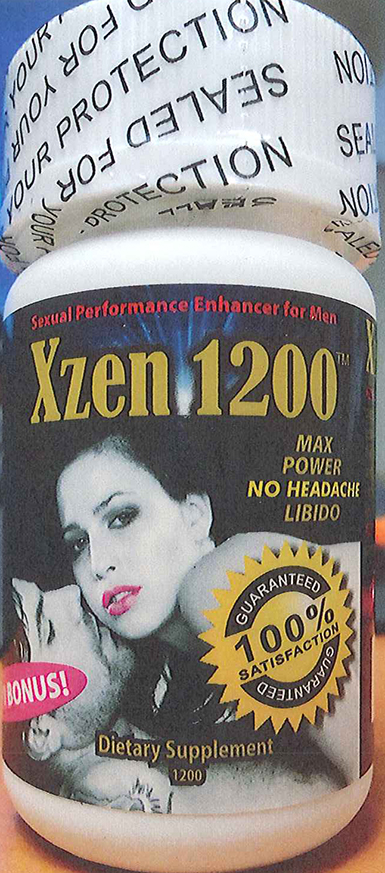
RECALLED – Dietary Supplement

April 1, 2014 – Product Recall – Nova Products, Inc. Issues Voluntary Nationwide Recall of Dietary Supplements with Undeclared Active Pharmaceutical Ingredients.